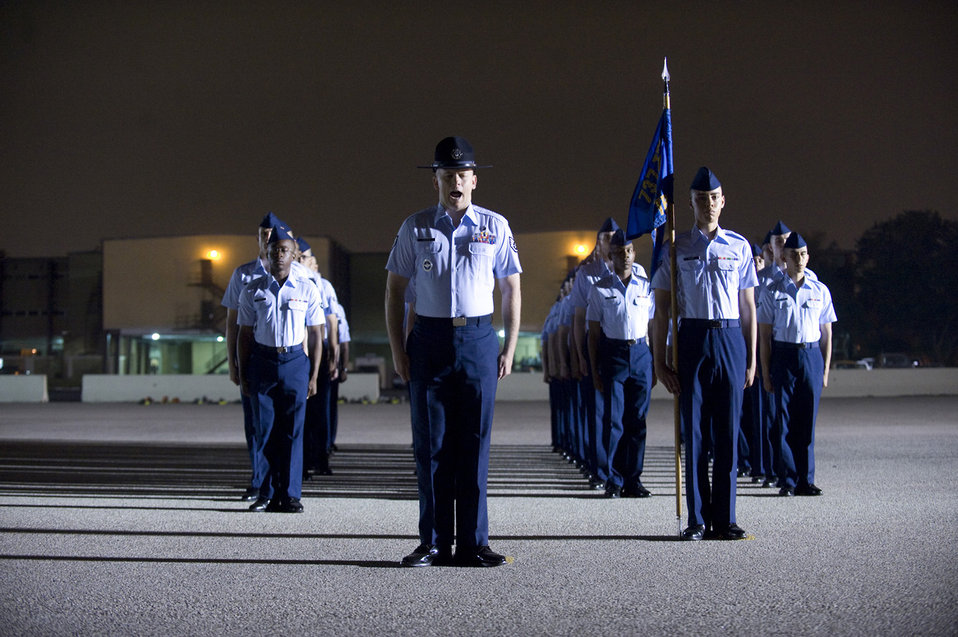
Graduation day

Staff Sgt. Robert George prepares his flight for graduation from Basic Military Training May 1 at Lackland Air Force Base, Texas. Sergeant George is a 324th Training Squadron military training instructor.